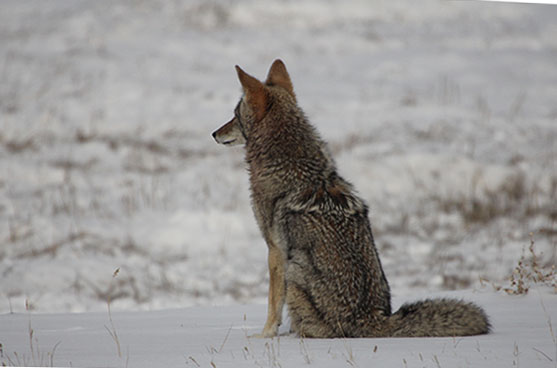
Scanning the Horizon

A coyote sits at attention as he scans the horizon.